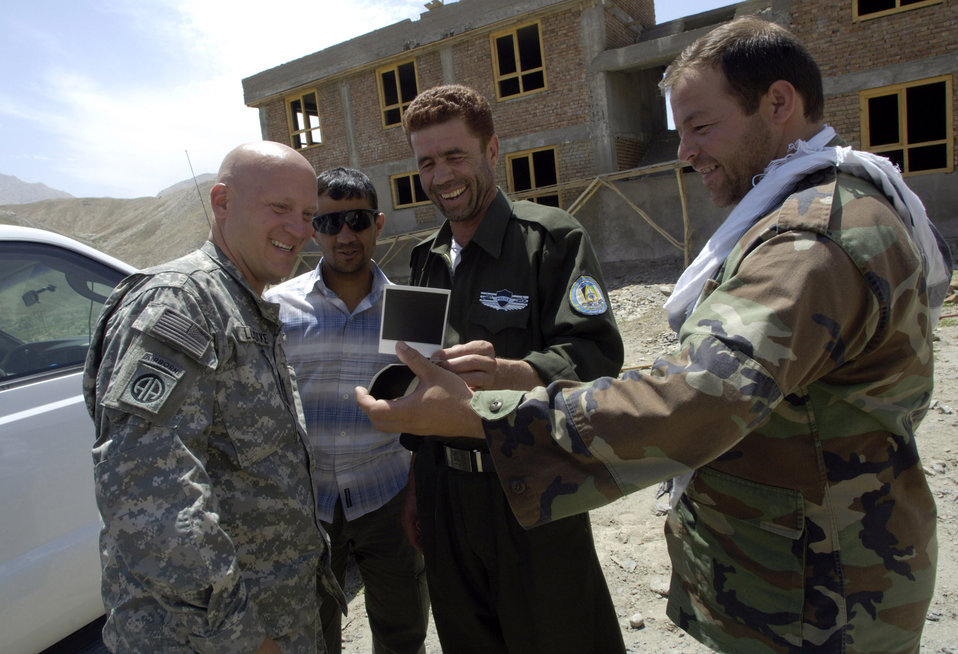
Airmen go hand-to-hand with Afghan National Police

Panjshir Provincial Reconstruction Team commander Lt. Col. Christopher Luedtke (left) and Anaba district police chief Zardot Towhidi (center) share a laugh over some photos they took Aug. 6 during a training session. Colonel Luedtke brought members of his PRT to the Anaba district of Panjshir province, Afghanistan, to provide training to Afghan National Police serving in the area. Colonel Luedtke is deployed from Hill Air Force Base, Utah.